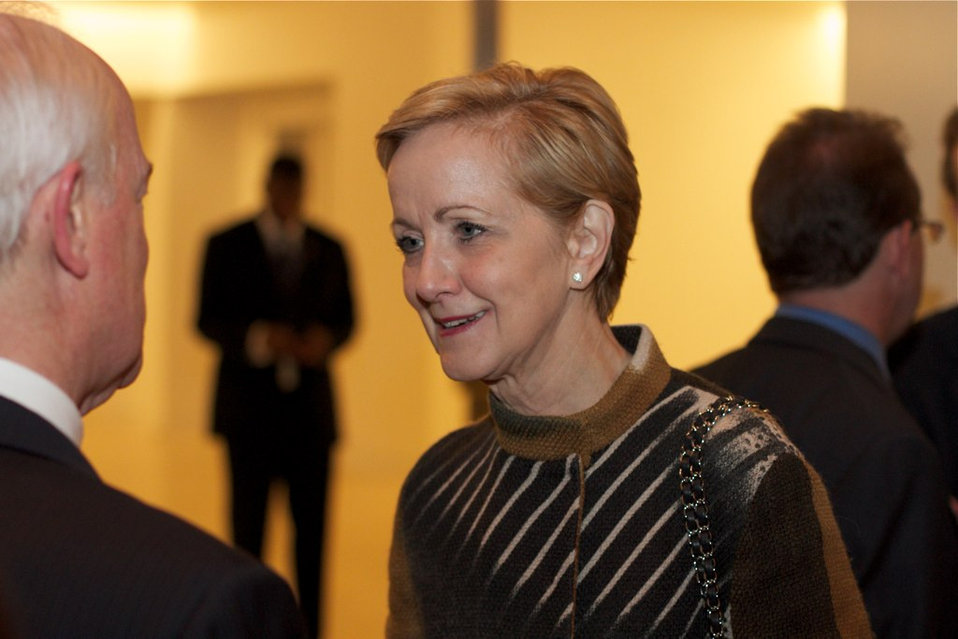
Assistant Secretary Stock (R) Participates in the U.S.-India Higher Education Summit

Assistant Secretary of State Ann Stock (R) participates in the U.S.-India Higher Education Summit at Georgetown University in Washington, D.C., on October 13, 2011.